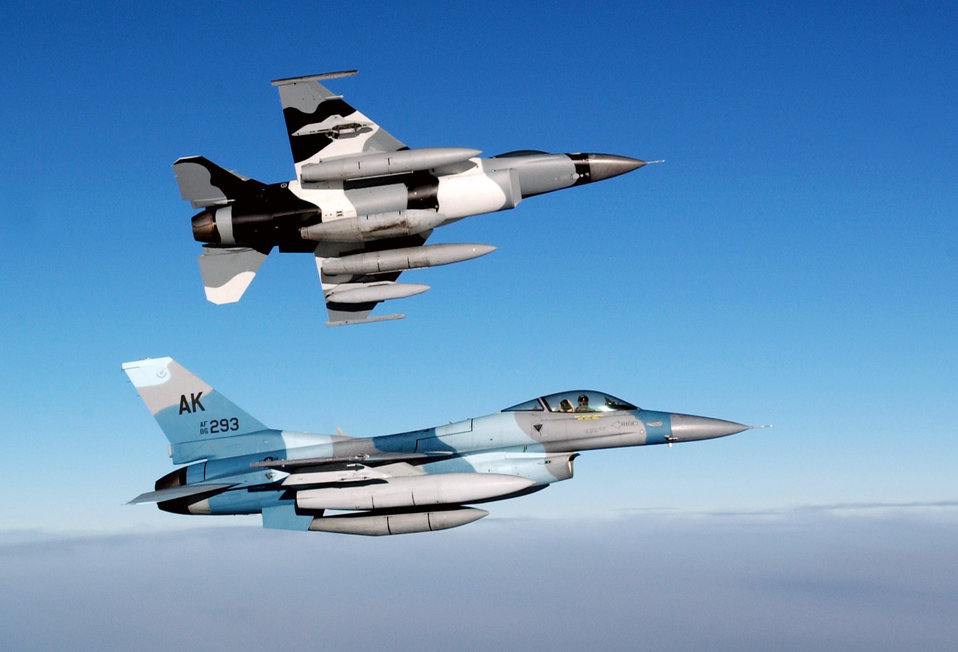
Two new aggressors

Two F-16 Fighting Falcons feature the new Artic Flanker paint scheme. The aircraft are on the way from Kunsan Air Base, South Korea, Jan. 20 to a new home at Eielson Air Force Base, Alaska, where they will participate in Red Flag Alaska exercises